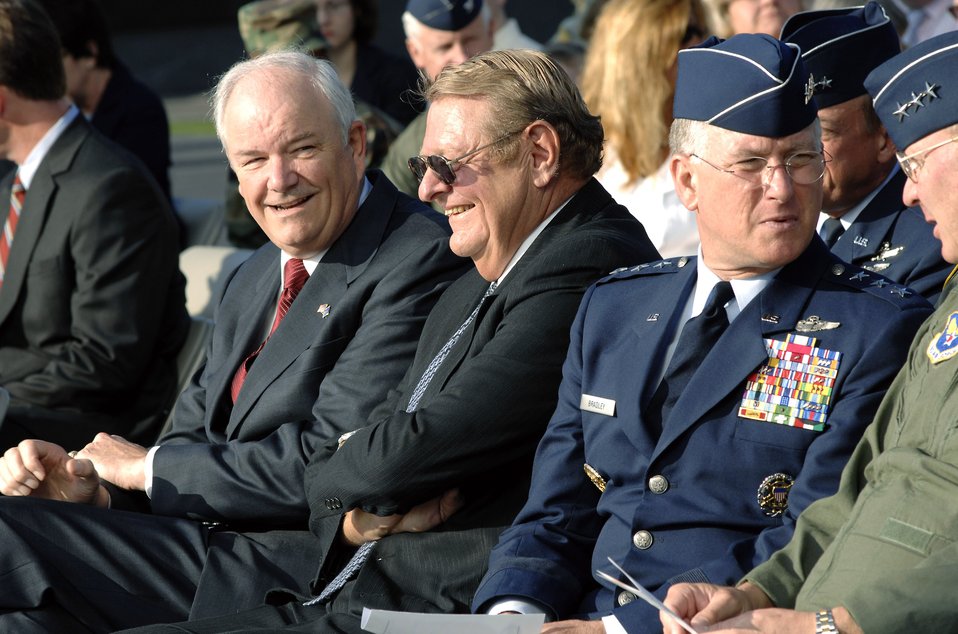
Air Force Combat Action Medal

Secretary of the Air Force Michael W. Wynne(left) and other dignitaries were on hand as the Air Force Combat Action Medal was presented to six Airmen. They were the first to receive the medal in a ceremony June 12 at the Air Force Memorial in Arlington, Va.